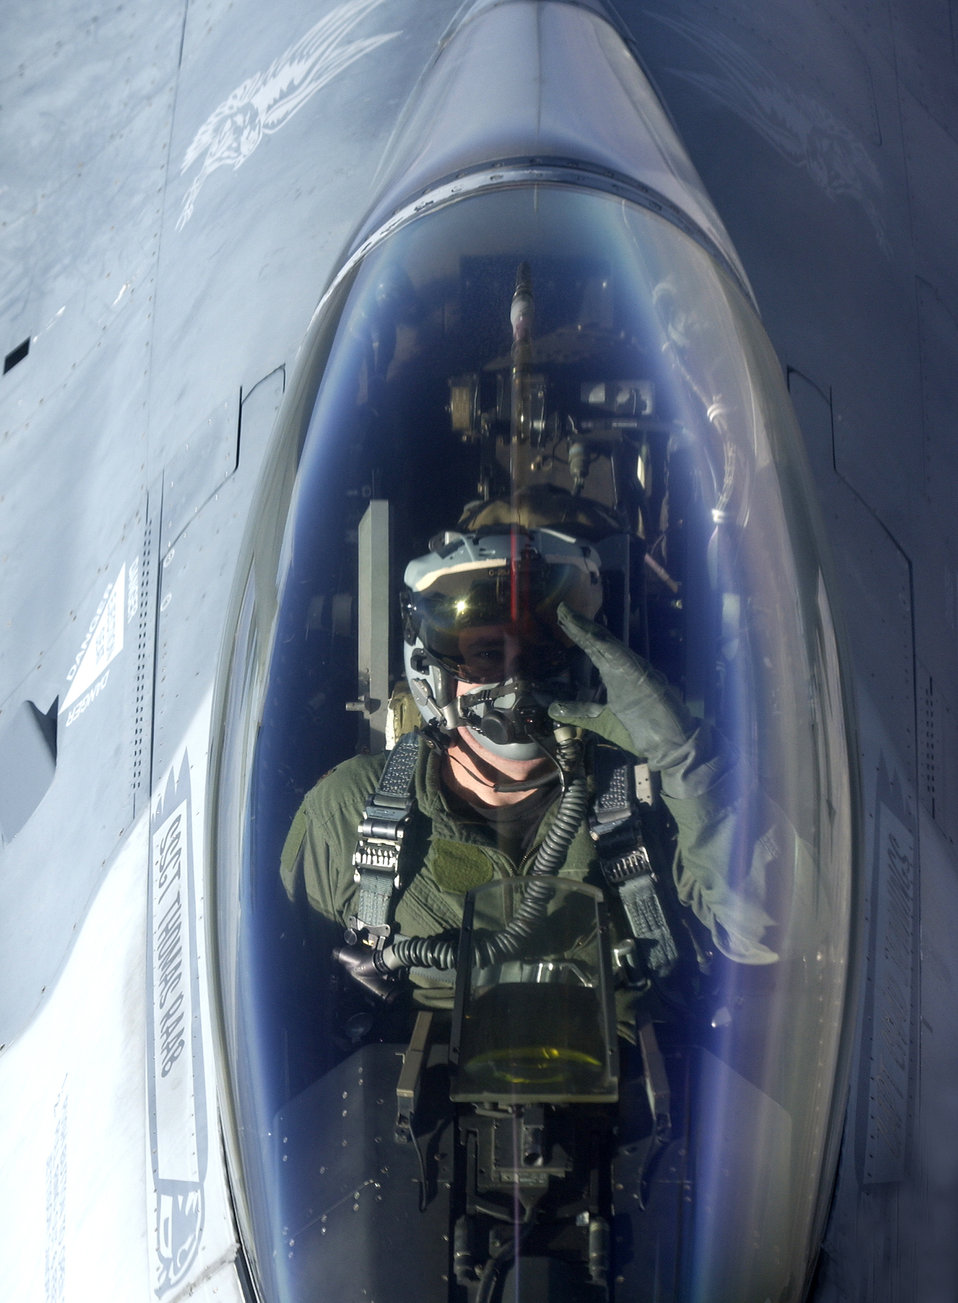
Red Flag kicks off at Nellis

An F-16 Fighting Falcon approaches the boom on a KC-135 Stratotanker to refuel Oct. 11 during Red Flag 07-1 being held at Nellis AFB, Nev. Red Flag runs from Oct. 10 to 20 and tests aircrews' warfighting skills in realistic combat situations. The aircraft will be flying missions during the day and night at the nearby Nevada Test and Training Range where they will simulate an air war. U.S. servicemembers, with representatives from each branch of service along with coalition forces, are participating in Red Flag.